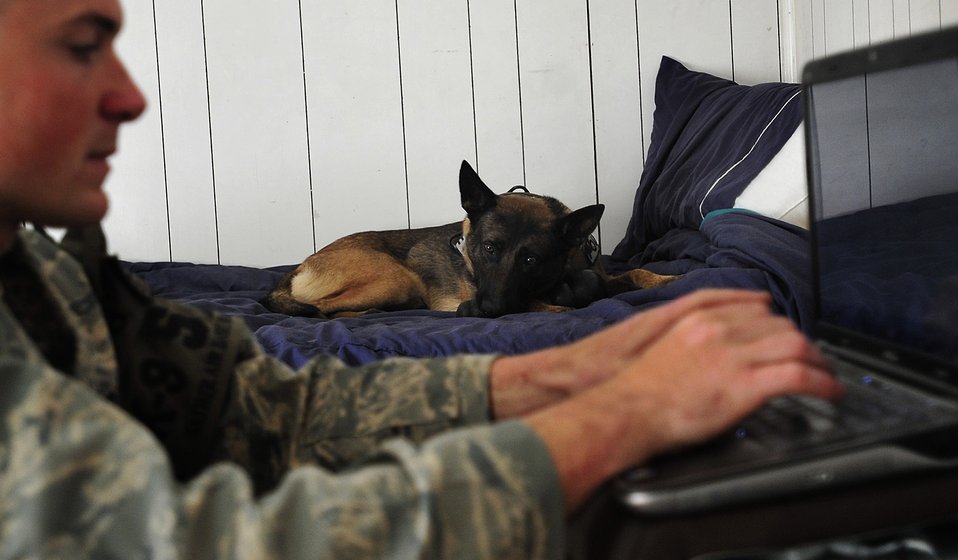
An Airman's Best Wingman

Geri, a patrol and explosive detector dog assigned to the 447th Expeditionary Security Forces Squadron, lays on Senior Airman Stephen Hanks' bed while Hanks updates Geri's records in his compartmentalized housing unit in Baghdad, Iraq, Dec. 11, 2011. Hanks is a 447th ESFS military working dog handler. For the last six months Geri and Hanks, have been supporting Operation New Dawn by providing explosive and psychological deterrence. Hanks and Geri are deployed from Patrick Air Force Base, Fla. Hanks is from Amherst, Mass.